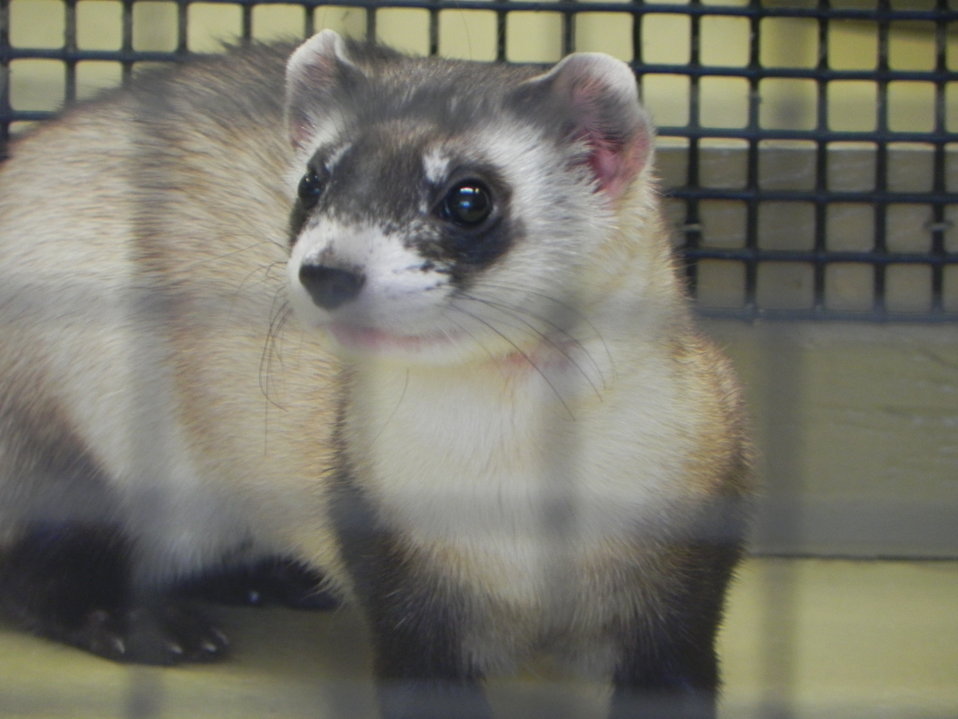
Black-footed Ferret

The Black-footed Ferrets in the BBF Breeding Center at the Phoenix Zoo 11/18/2010.